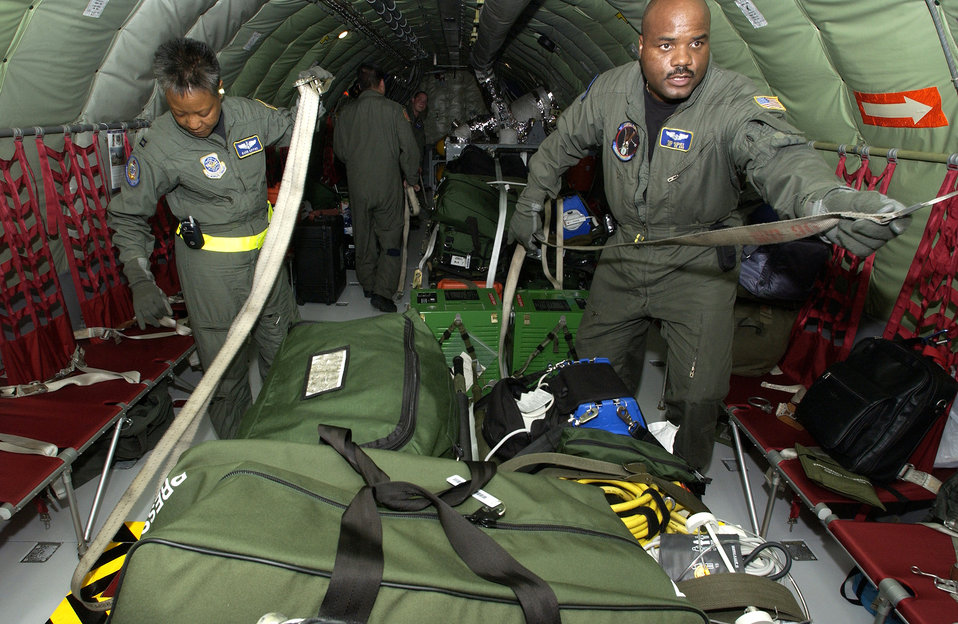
Cargo tie-down

SCOTT AIR FORCE BASE, Ill. -- Capt. Barbara Kippins and Tech. Sgt. Todd Hughes strap down cargo on a KC-135 Stratotanker prior to departing for San Antonio Sept. 24, while assisting with humanitarian operations. Both Airmen are from the 375th Aeromedical Evacuation Squadron, Scott Air Force Base, Ill.